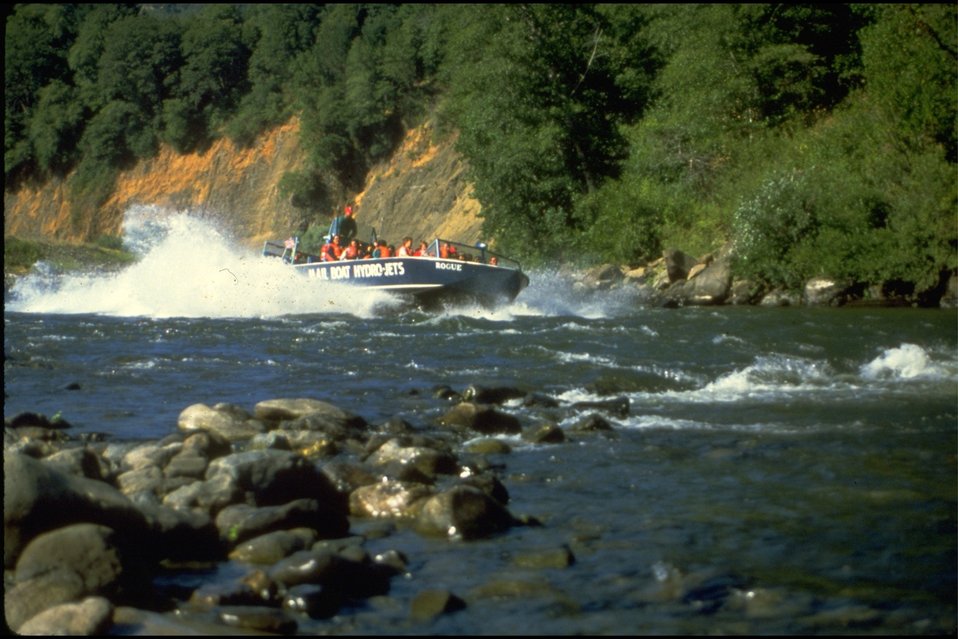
Rogue River - Wild section, near Watson Creek. Commercial Jet boat from Gold Beach "Mail Boat".